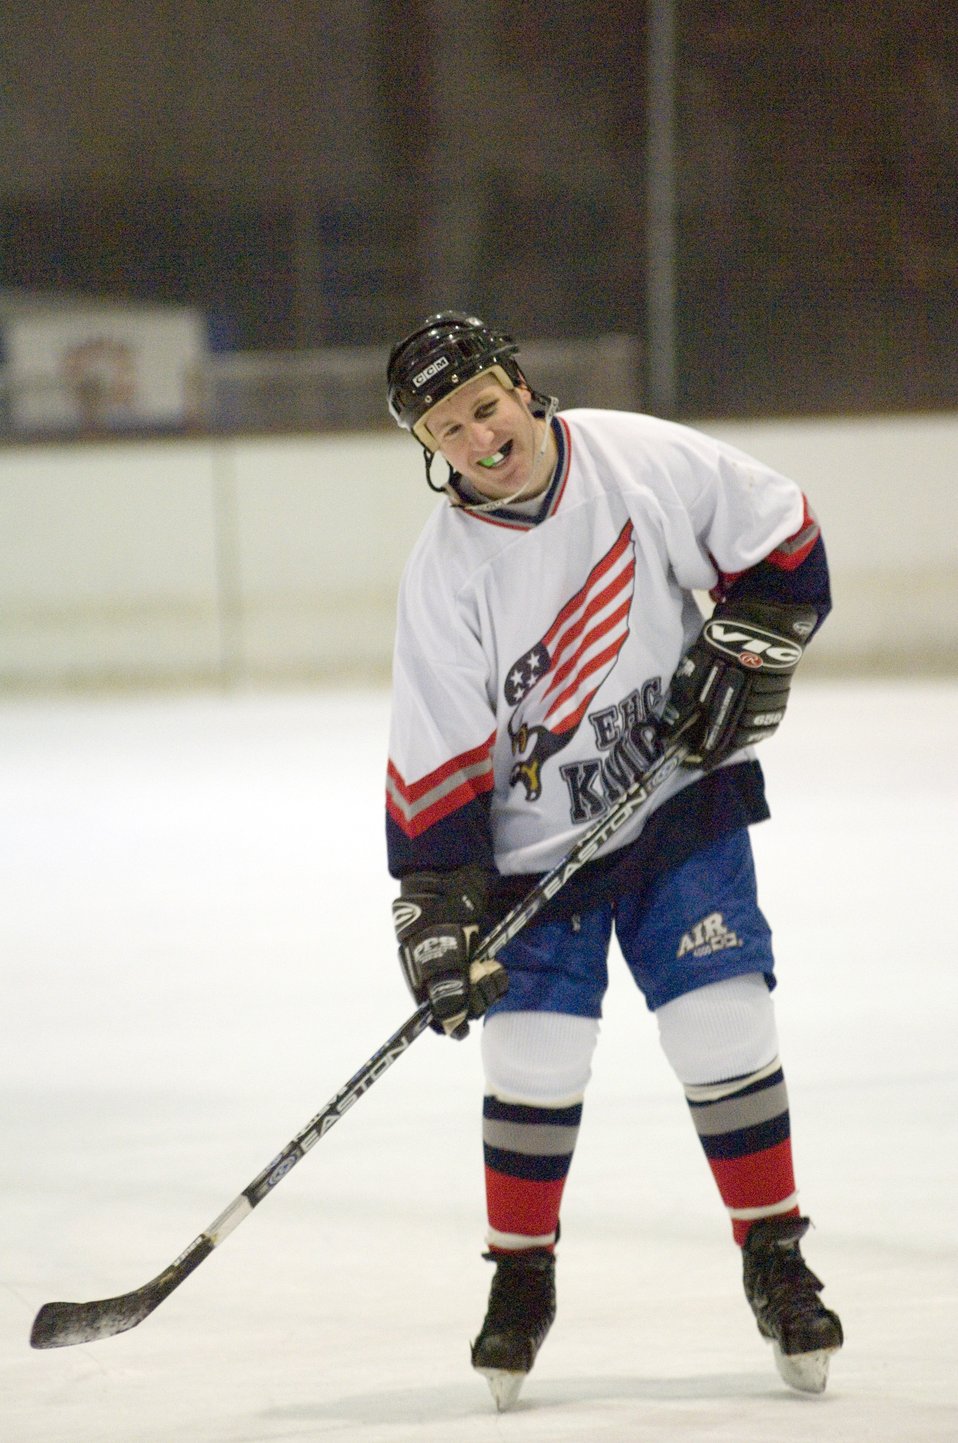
Eagles glide toward tourney

EPPELHEIM, Germany (AFPN) -- Capt. Paul Hilfer plays in Eppelheim's Eishalle. The KMC Eagles won 6-4 against the Eppelheim Hawks, maintaining second place in their league. The Kaiserslautern Military Community hockey team is made up of 30 players in different skill levels varying from semi-pro and college to players experiencing their first organized game. Captain Hilfer is with the 435th D Squadron at Ramstein Air Base, Germany.